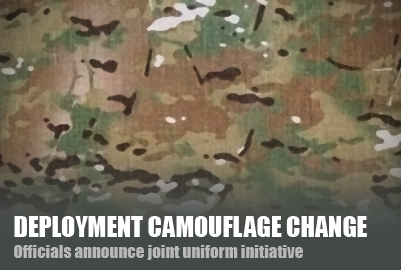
New Camouflage Uniform